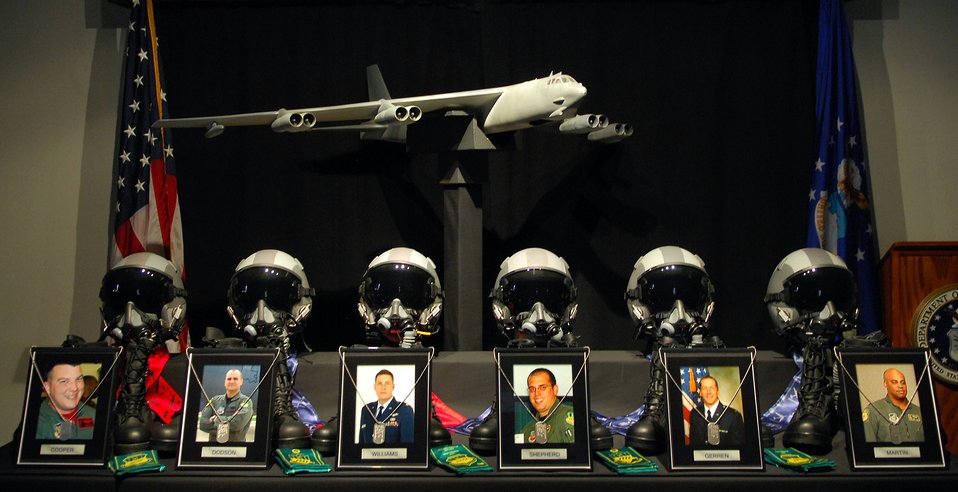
We remember

The 8th Air Force Museum at Barksdale Air Force Base, La., created a memorial July 24 to remember the crewmembers of Raider 21, the B-52 Stratofortress that crashed near Andersen AFB, Guam.